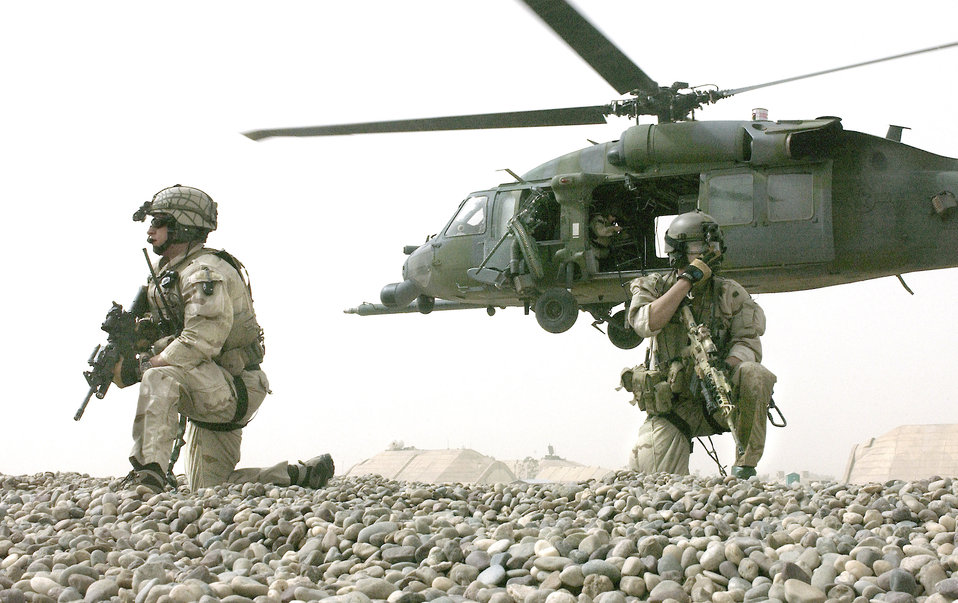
Iraqi Freedom

BALAD AIR BASE, Iraq - An Air Force HH-60G Pavehawk from the 64th Expeditionary Rescue Squadron deploys pararescuemen here May 15.